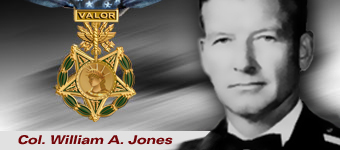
Col. William A. Jones, Medal of Honor recipient.